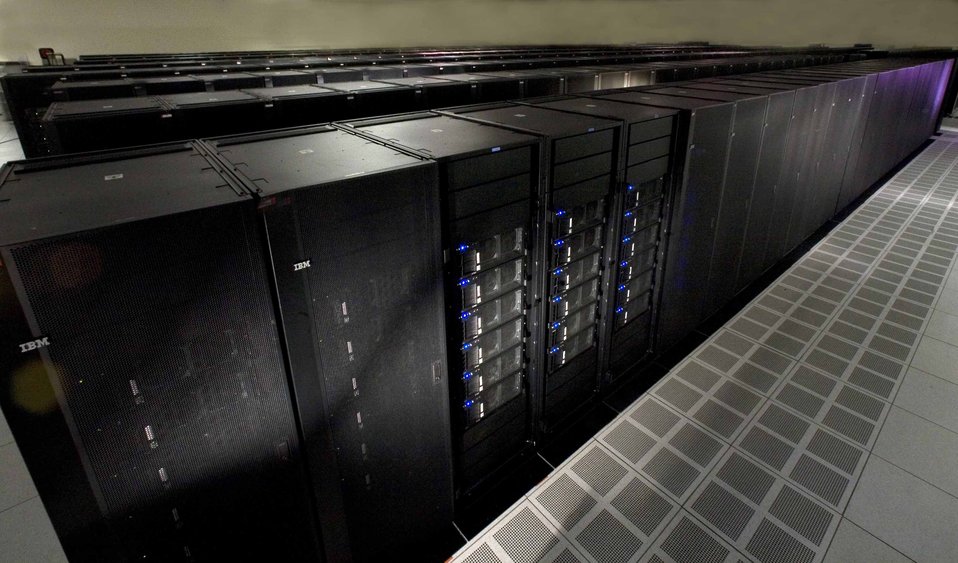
ROADRUNNER SUPERCOMPUTER AT LOS ALAMOS NATIONAL LABORATORY.

THE ROADRUNNER IS THE WORLD'S FIRST SUPERCOMPUTER TO ACHIEVE SUSTAINED OPERATING PERFORMANCE SPEEDS OF ONE PETAFLOP/S. OPERATING AT PETAFLOP/S PERFORMANCE MEANS THE MACHINE CAN PROCESS A MILLION BILLION CALCULATIONS EACH SECOND. IN PARTNERSHIP WITH LOS ALAMOS AND THE NATIONAL NUCLEAR SECURITY ADMINISTRATION, ROADRUNNER WAS BUILT BY IBM AND WILL BE HOUSED AT LANL, WHERE IT WILL BE USED TO PERFORM CALCULATIONS THAT WILL VASTLY IMPROVE THE NATION'S ABILITY TO CERTIFY THAT THE UNITED STATES NUCLEAR WEAPONS STOCKPILE IS RELIABLE WITHOUT CONDUCTING UNDERGROUND NUCLEAR TESTS. IT WILL ALSO BE USED TO SCIENCE AND ENGINEERING SUCH AS ENERGY RESEARCH, UNDERSTANDING COMPLEX NEURAL AND BIOLOGICAL SYSTEMS, AND BIOMEDICAL APPLICATIONS. ROADRUNNER WAS BUILT USING COMMERCIALLY AVAILABLE HARDWARE, INCLUDING ASPECTS OF COMMERICAL GAME CONSOLE TECHNOLOGIES.